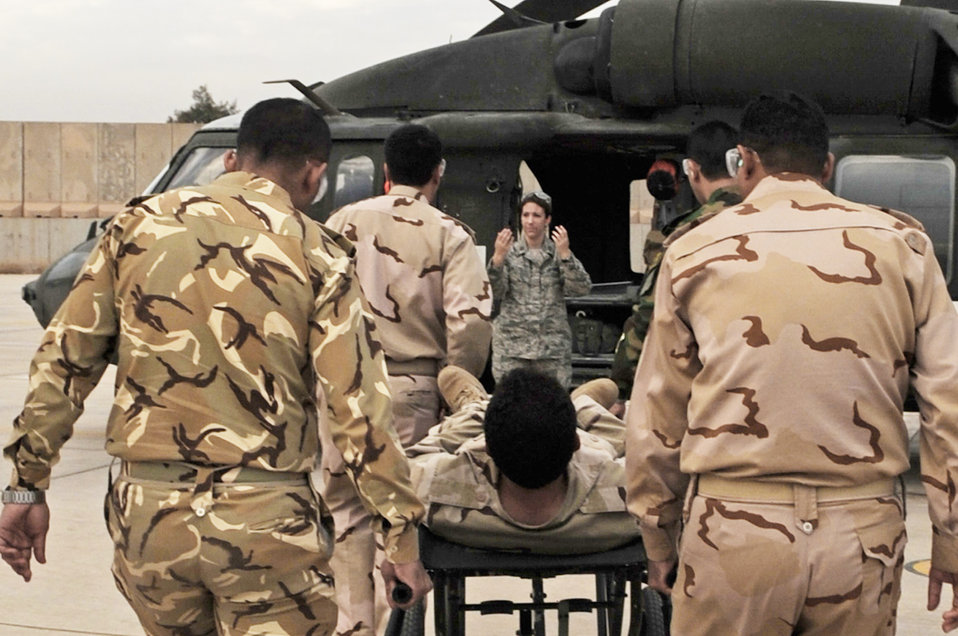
Air Force medics partner with Iraqi Ministry of Defense hospital

Capt. Elizabeth Hoettels guides Iraqi air force members through medical evacuation training Dec. 21, 2009, at the Air Force Theater Hospital, at Joint Base Balad, Iraq. The purpose of the training is to help Ministry of Defense officials strengthen their health care system for Iraqi troops. Captain Hoettels is from the 332nd Expeditionary Medical Group.